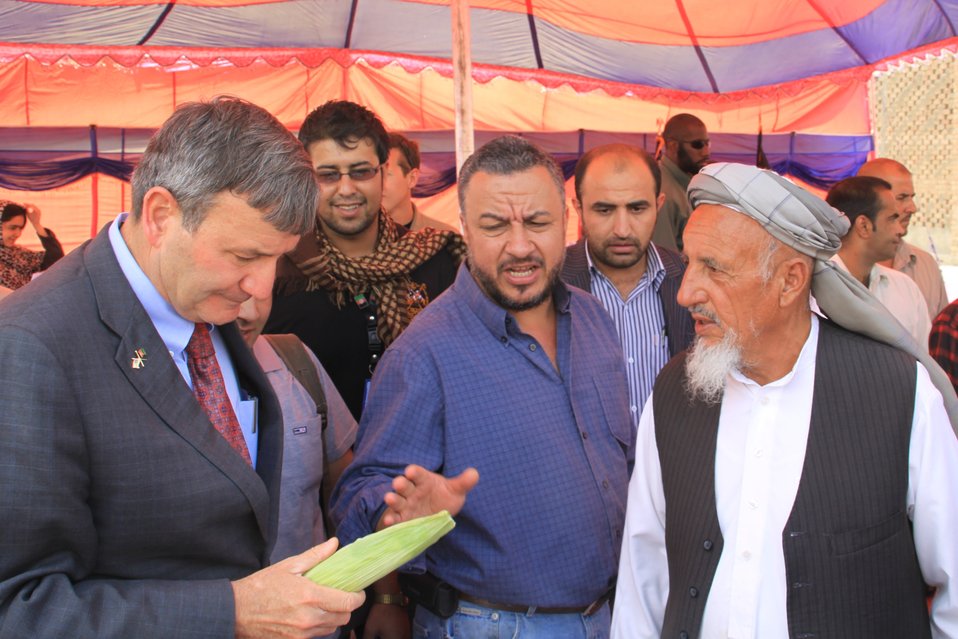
Badam Bagh Farm